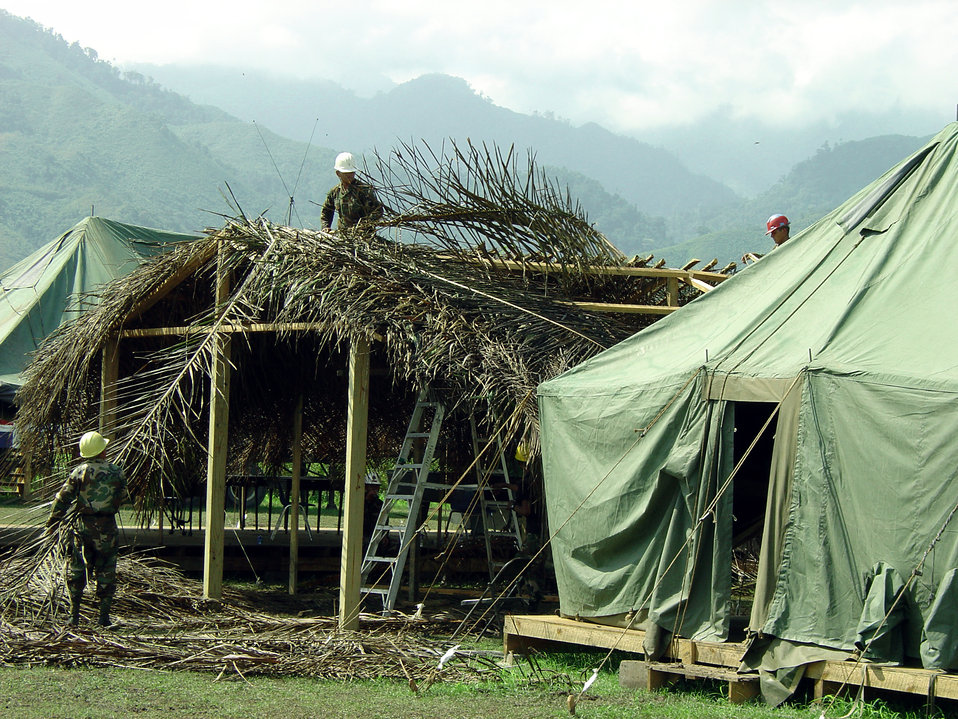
Experience in Honduras

SABA, Honduras -- Honduran soldiers place tree thatch on the roof of the camp's morale, welfare and recreation tent. The Honduran army, U.S. Army, Puerto Rican Army National Guard and the 934th Civil Engineer Squadron shared the camp during an exercise. The main focus of the exercise was to build local schools, medical clinics and provide medical support to local villages.